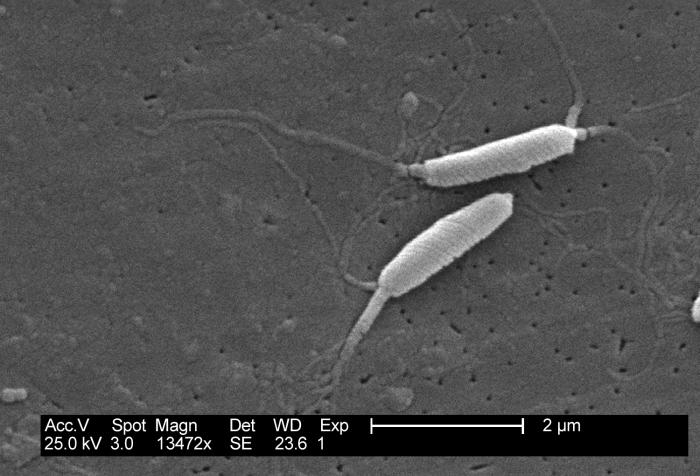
This scanning electron micrograph depicts two Flexispira rappini bacteria, magnified 13,472x.